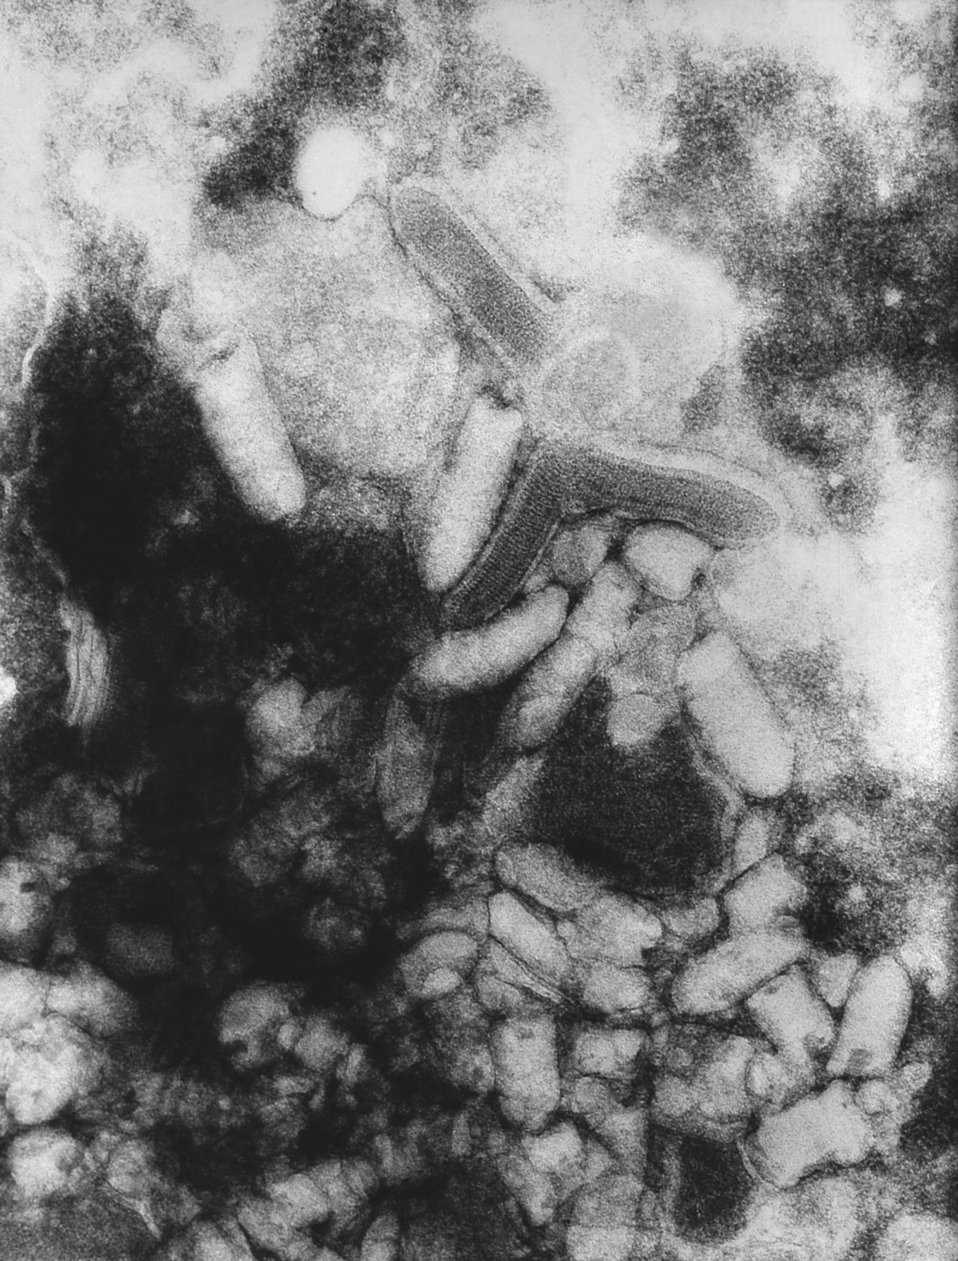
This negatively-stained transmission electron micrograph (TEM) revealed the presence of numerous negative-sense, single-stranded RNA ((-) ssRNA) Flanders virus virions. Note the bullet-like shape of these virions, which are very similar to other Rhabdoviruses, i.e., see PHIL 1876 depicting a TEM revealing the bullet-shaped rabies virus virions.